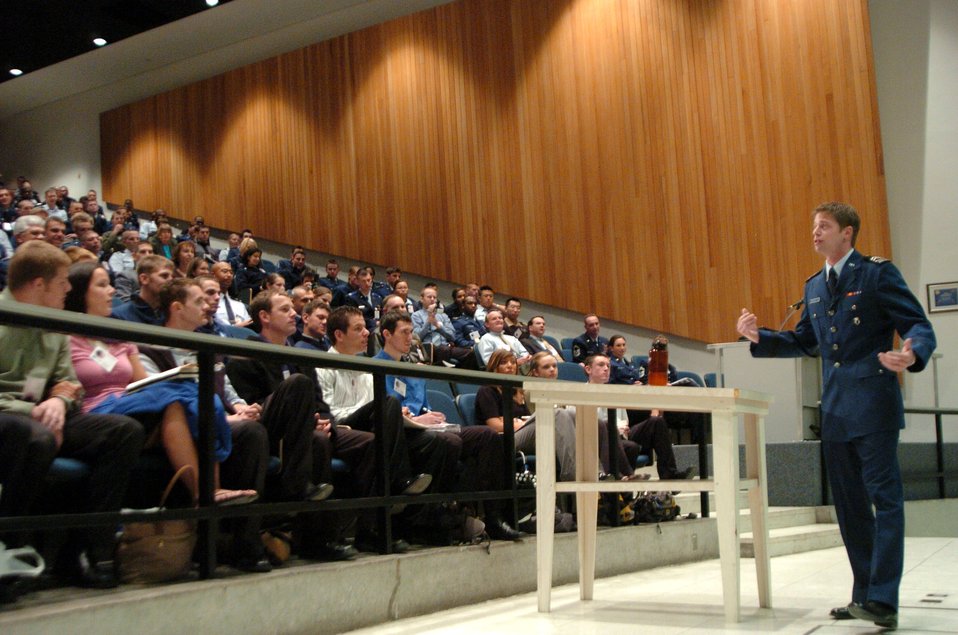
Triumph over Tragedy

Cadet 2nd Class Erik Mirandette talks to a packed auditorium at the U.S. Air Force Academy in Colorado Springs, Colo. Cadet Mirandette was injured in a terrorist bombing in Cairo, Egypt while on a humanitarian mission delivering medicine to small towns across Africa. The bombing killed his younger brother Alex.